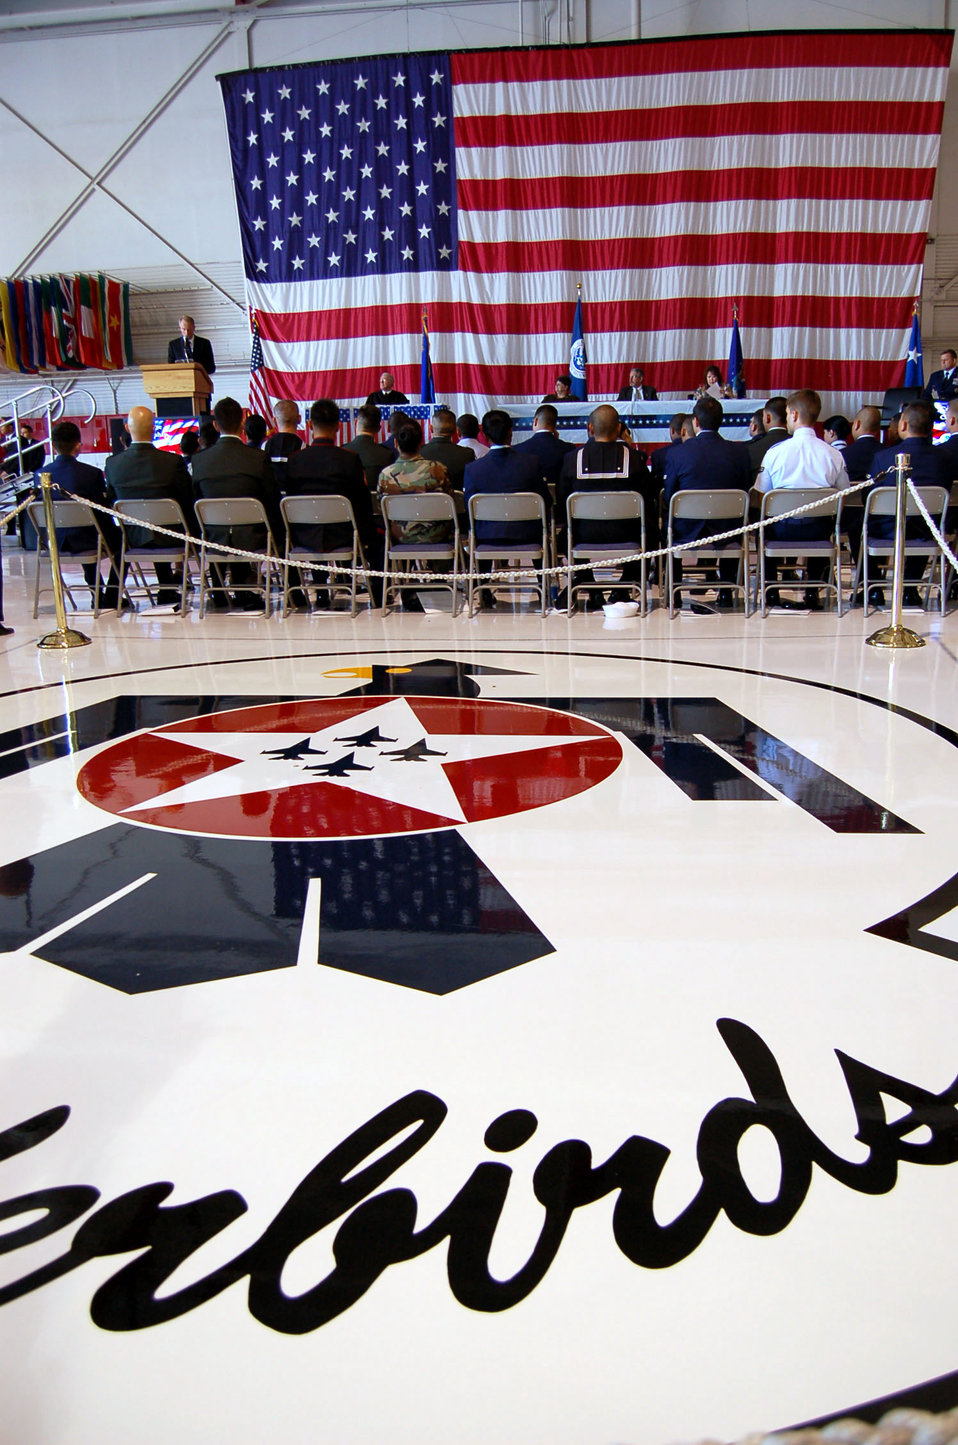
Airman takes next step toward her American dream

Thomas C. Parr speaks to attendees at the naturalization ceremony next to the Air Force Thunderbirds Air Demonstration Squadron logo on the team's hangar floor Nov. 6 at Nellis Air Force Base, Nev. Mr. Parr is the chief of staff for the U.S. Citizenship and Immigration Services. Airman 1st Class Olga Bilobol was one of 33 military members to participate in the event, which is the last step in the process of becoming an American citizen. The new citizens included representatives from all the branches of the military. The event was part of the base's Heritage to Horizons celebration of the Air Force's 60th Anniversary